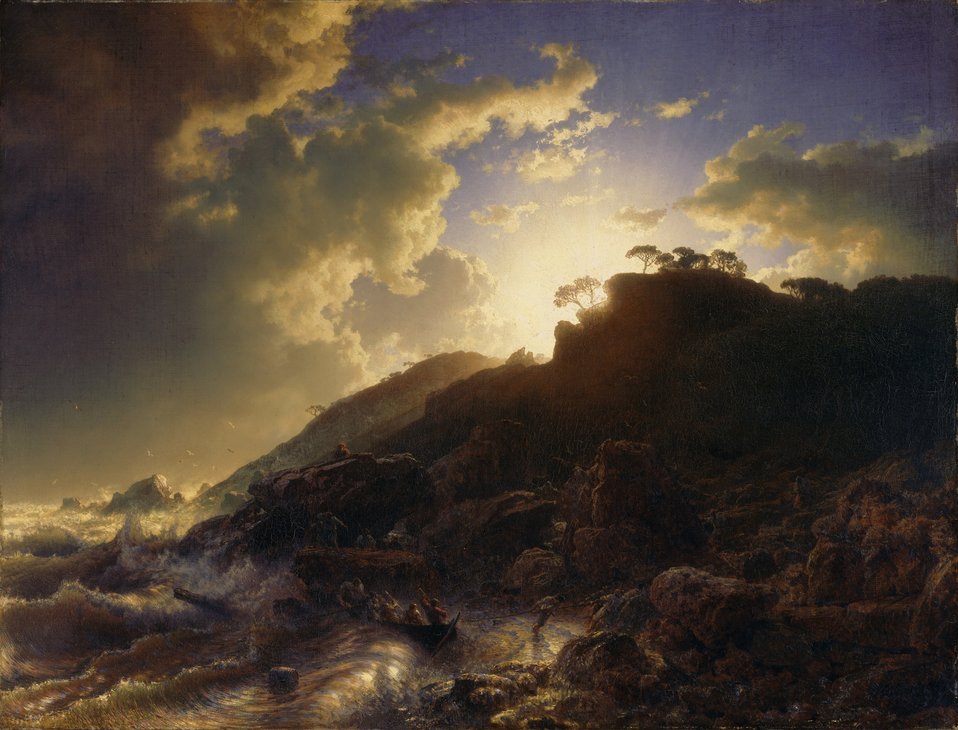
Andreas Achenbach - Sonnenuntergang nach einem Sturm an der Küste von Sizilien